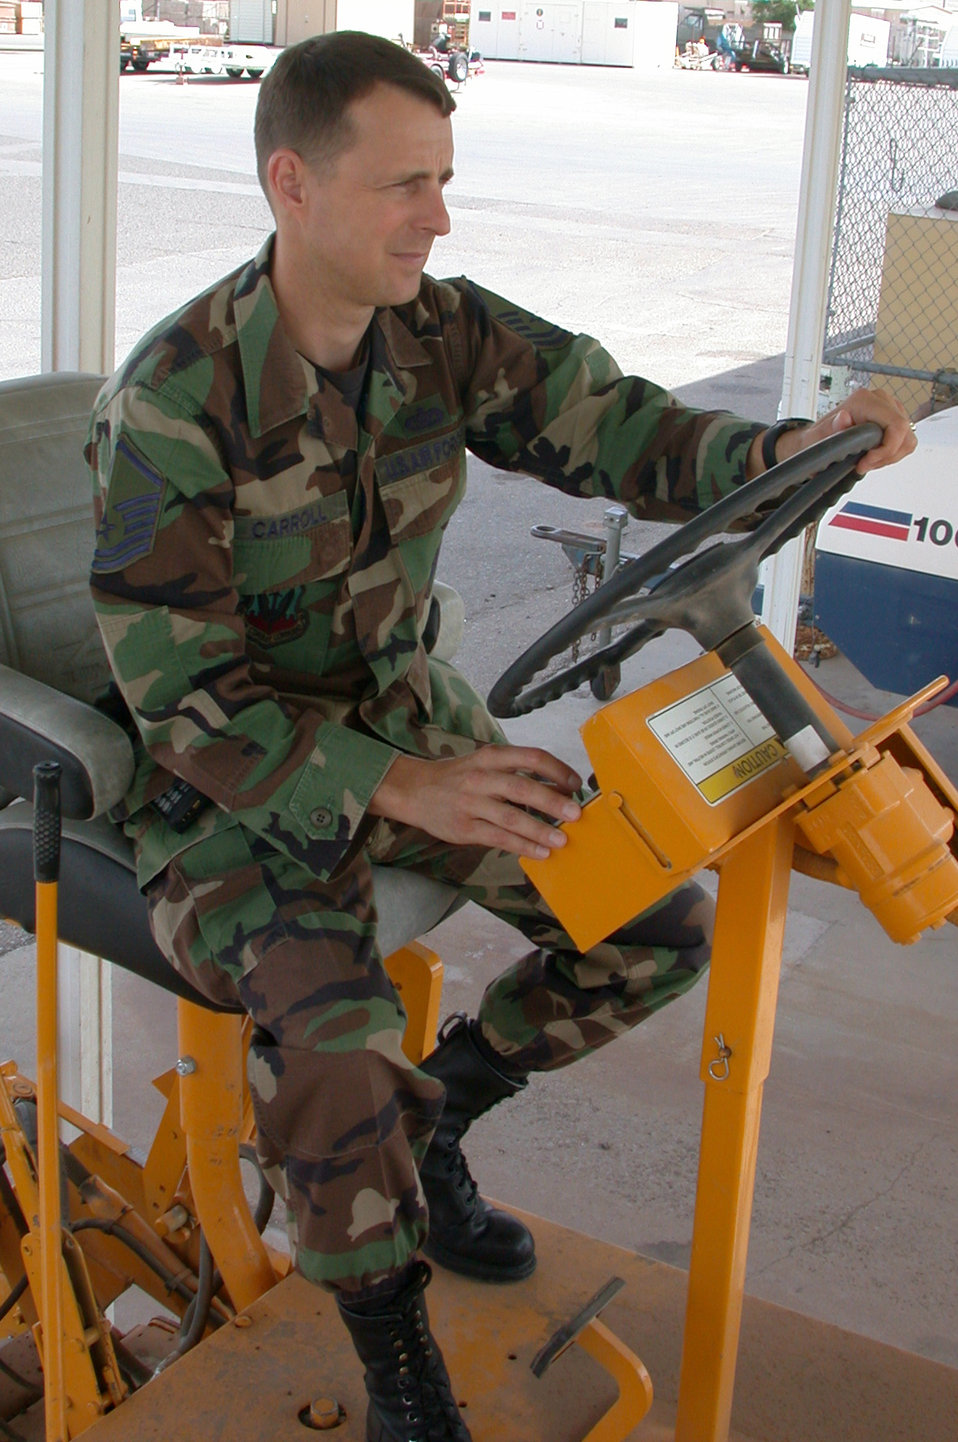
Cashing in on ideas

HOLLOMAN AIR FORCE BASE, N.M. -- Master Sgt. Marshall Carroll drives a paver that earned him $10,000 through the Innovative Development through Employee Awareness program. He is the 49th Civil Engineer Squadron horizontal-construction superintendent and earned another $10,000 for suggesting the base buy an asphalt zipper to tear up and recycle old pavement.